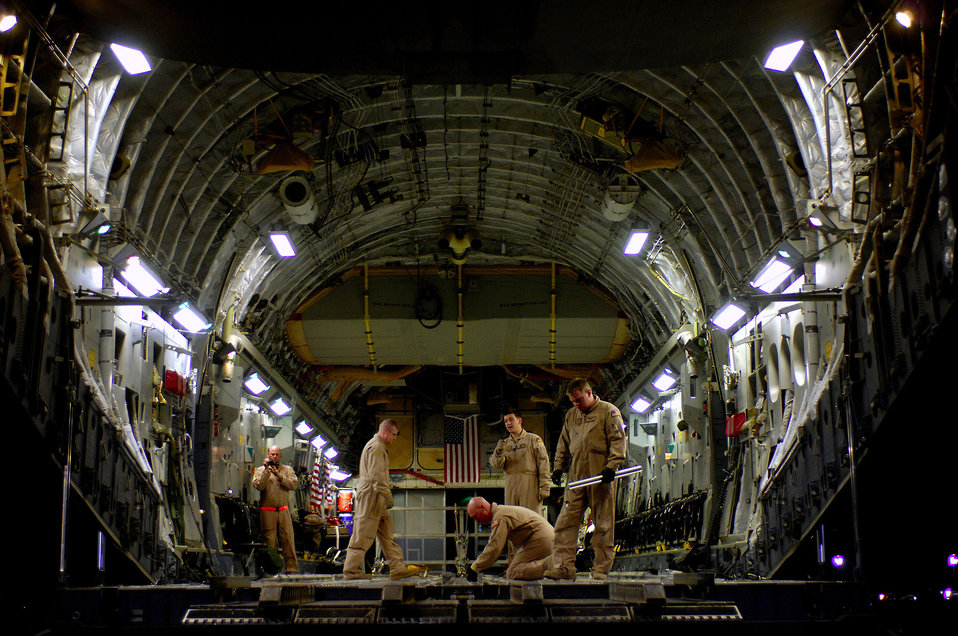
Afghanistan airdrop

Loadmasters preflight a C-17 Globemaster III for a Joint Precision Airdrop Delivery System of 40 bundles of humanitarian supplies to a drop zone April 13 in Afghanistan. The loadmasters are from the 17th Airlift Squadron from Charleston Air Force Base, S.C., and are deployed to the 816th Expeditionary Airlift Squadron in Southwest Asia.